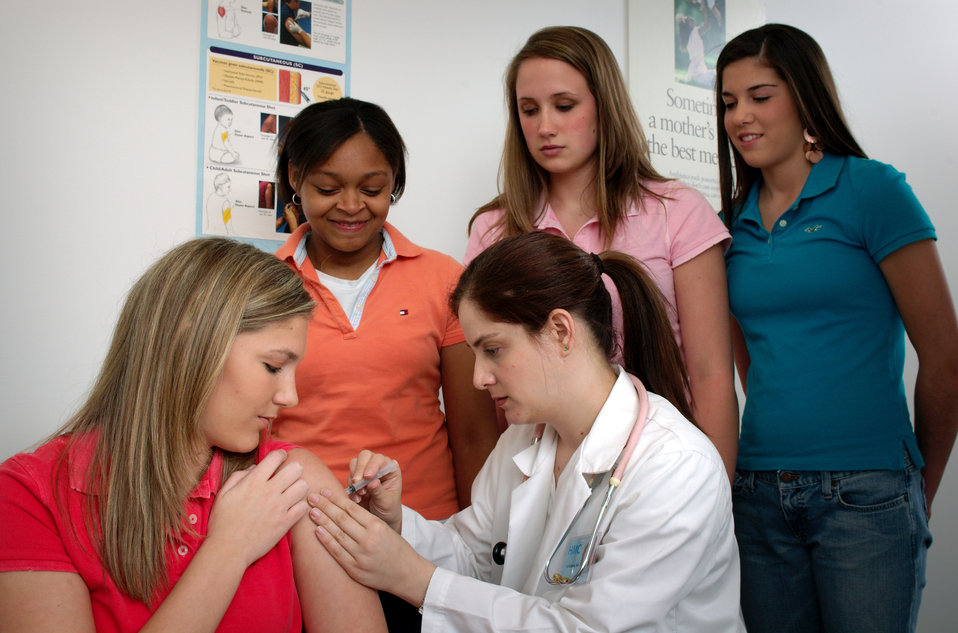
Nurse giving an injection

The nurse in this 2006 image was in the process of administering an intramuscular injection into the left shoulder muscle of this 15-year old girl, while three of her friends were shown observing from behind.